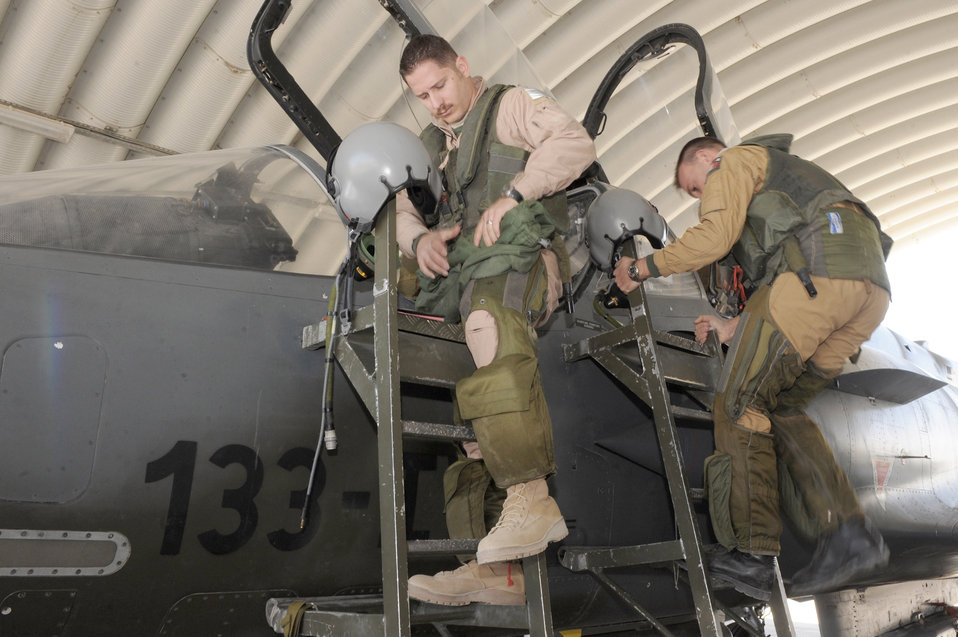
US, French pilot swap

Maj. Skyler Hester and French air force Capt. Mathieu Boireau prepare to leave for a combat mission in a Mirage 2000D Nov. 11, 2010, at Kandahar Airfield, Afghanistan. Major Hester is an instructor pilot assigned to the French 1/3 Fighter Squadron. He is deployed with the French unit as part of the three-year foreign exchange pilot program.